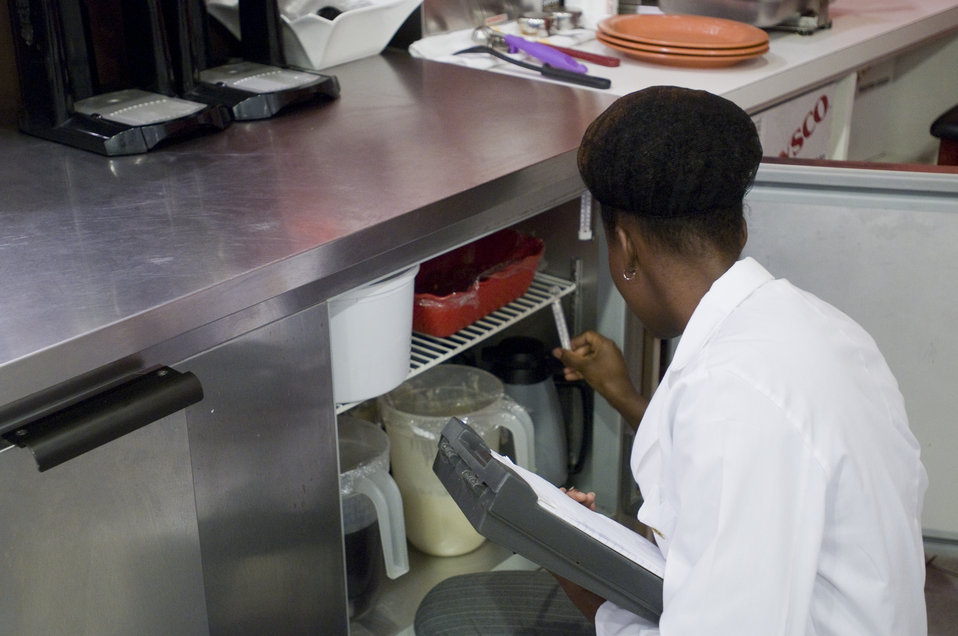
This image depicts a state-appointed public health inspector, who at this pint in her inspection, was checking the thermometer in a stainless steel refridgerator, making sure that the temperature was within the required limits necessary to reduce food spoilage and contamination. Health inspectors are not only concerned with the transmission of pathogenic organisms due to unsanitary conditions, or with toxic substance contamination, but also with the safety precautions to be taken to insure an environment is generally safe.